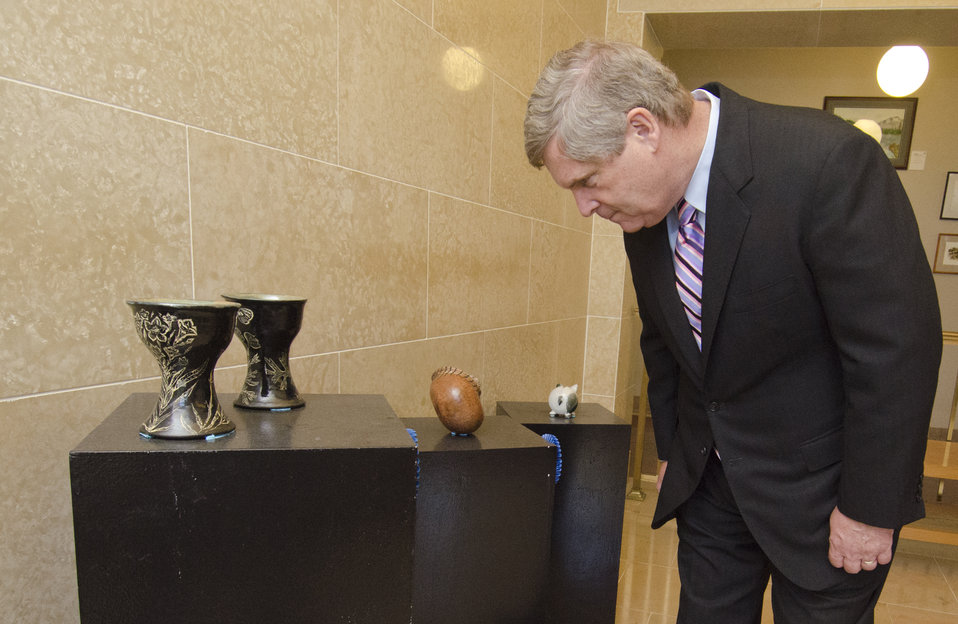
Agriculture Secretary Tom Vilsack visits the gallery of winning entries and some of the employee artists from the inaugural competition for Art and Agriculture, Thursday, May 31, 2012, in, in the South Building, Washington, D.C. U.S. Department of Agriculture (USDA) full-time and part-time employees submitted art based on ten agricultural themes. The event was part of USDA's 150th Anniversary celebration and the winning artwork is on display from May 15 through December 31, 2012. Artistic expression is a creative outlet that is vital for an individual to grow and develop in their environment.